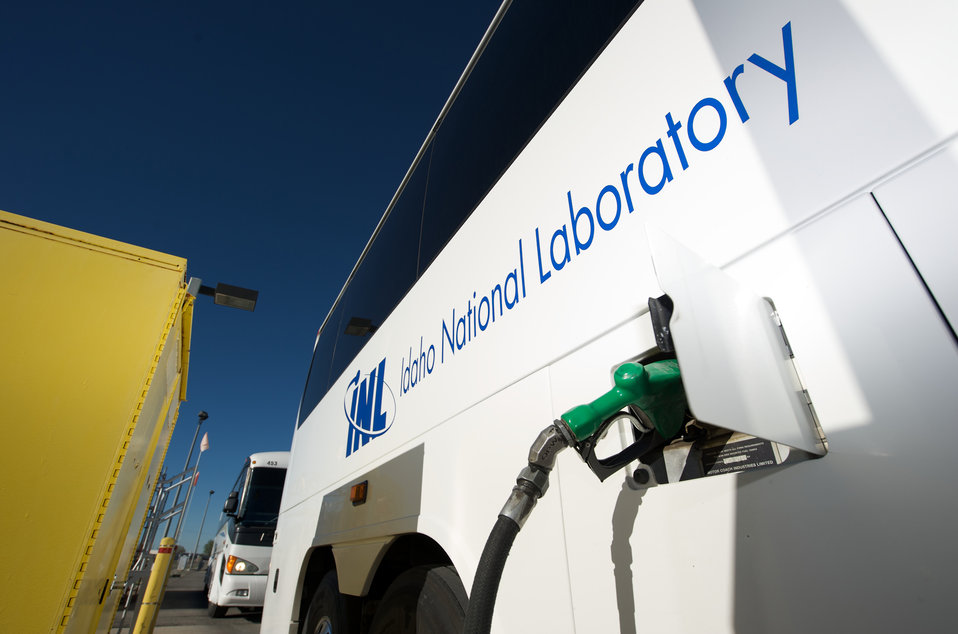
Idaho National Laboratory bus fueling with B20 (20% biodiesel) fuel.